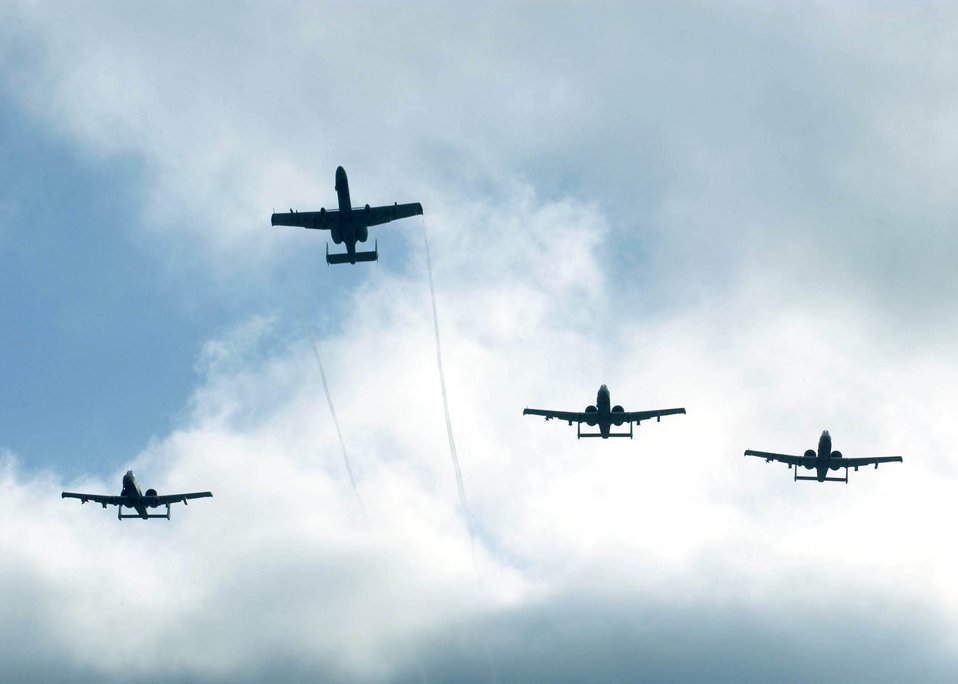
Battle of the Bulge remembered

PERLE, Luxemburg -- A-10 Thunderbolt IIs from the 81st Fighter Squadron at Spangdahlem Air Base, Germany, fly over a ceremony commemorating the 60th Anniversary of the Battle of the Bulge here.